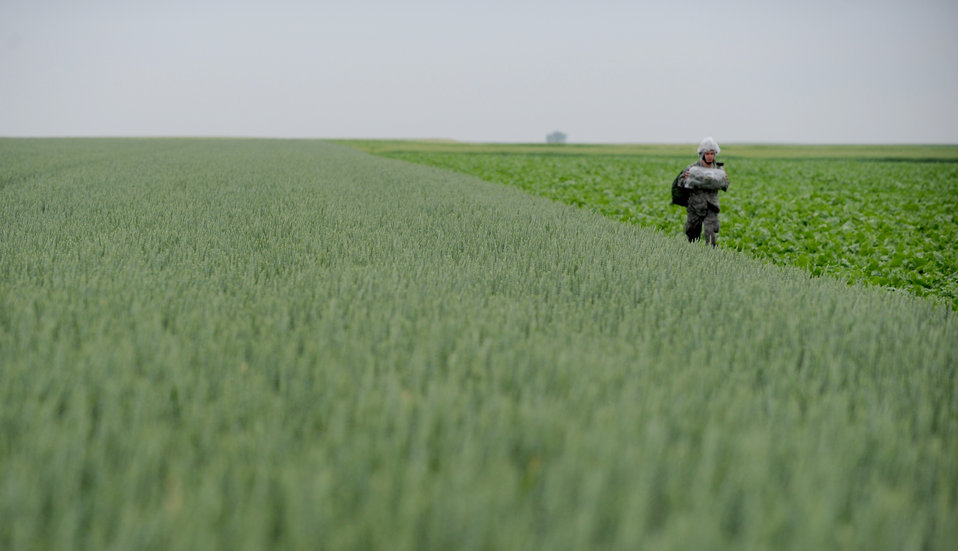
NATO Jump Week 2010

A servicemember carries his gear after parachuting from a C-17 Globemaster III June 17, 2010, over drop zone at Alzey, Germany, during International Jump Week 2010. This airborne jump is officially known as NATO Jump Week and was the first time a NATO jump was conducted from a C-17.